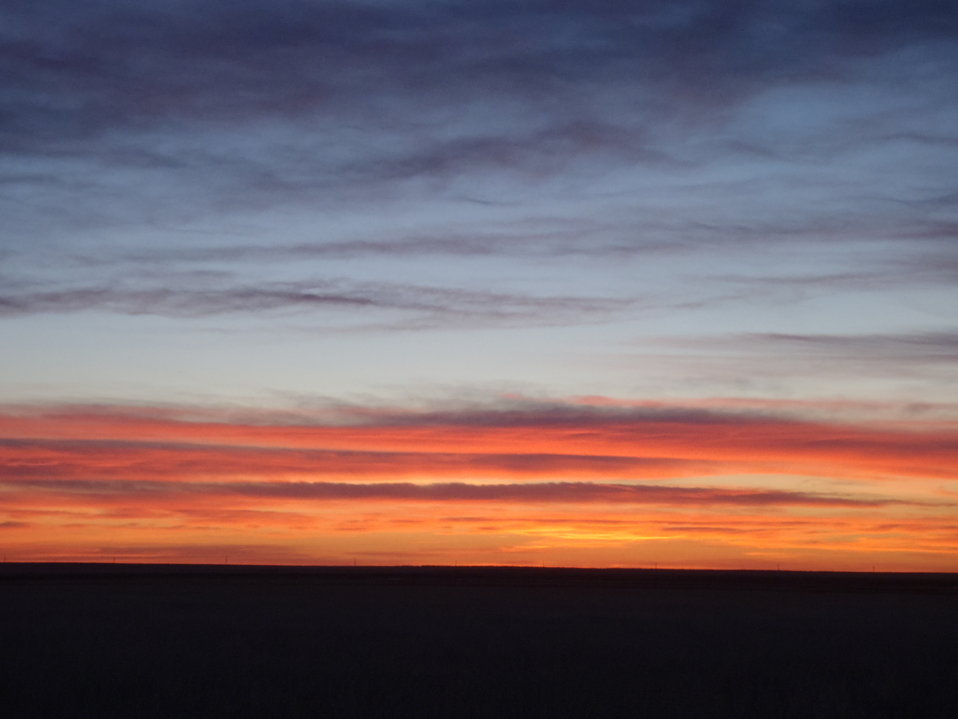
Sunrise On The Refuge

We get some amazing sunrises at the Refuge. You can see why Montana is nicknamed 'Big Sky Country!'